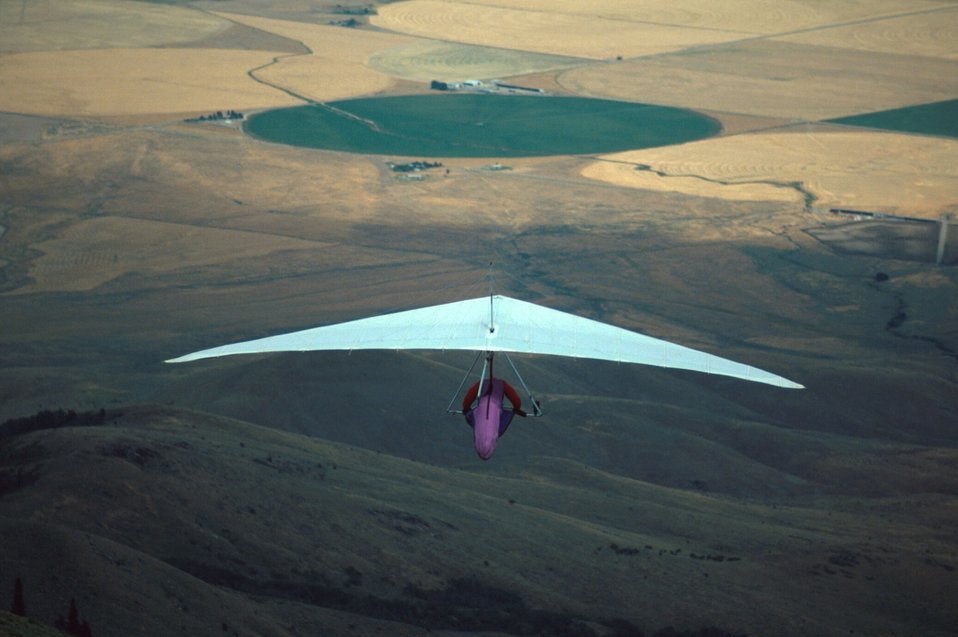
Hang Gliders King Mountain Arco Idaho Idaho Falls Field Office USRD Upper Snake River District